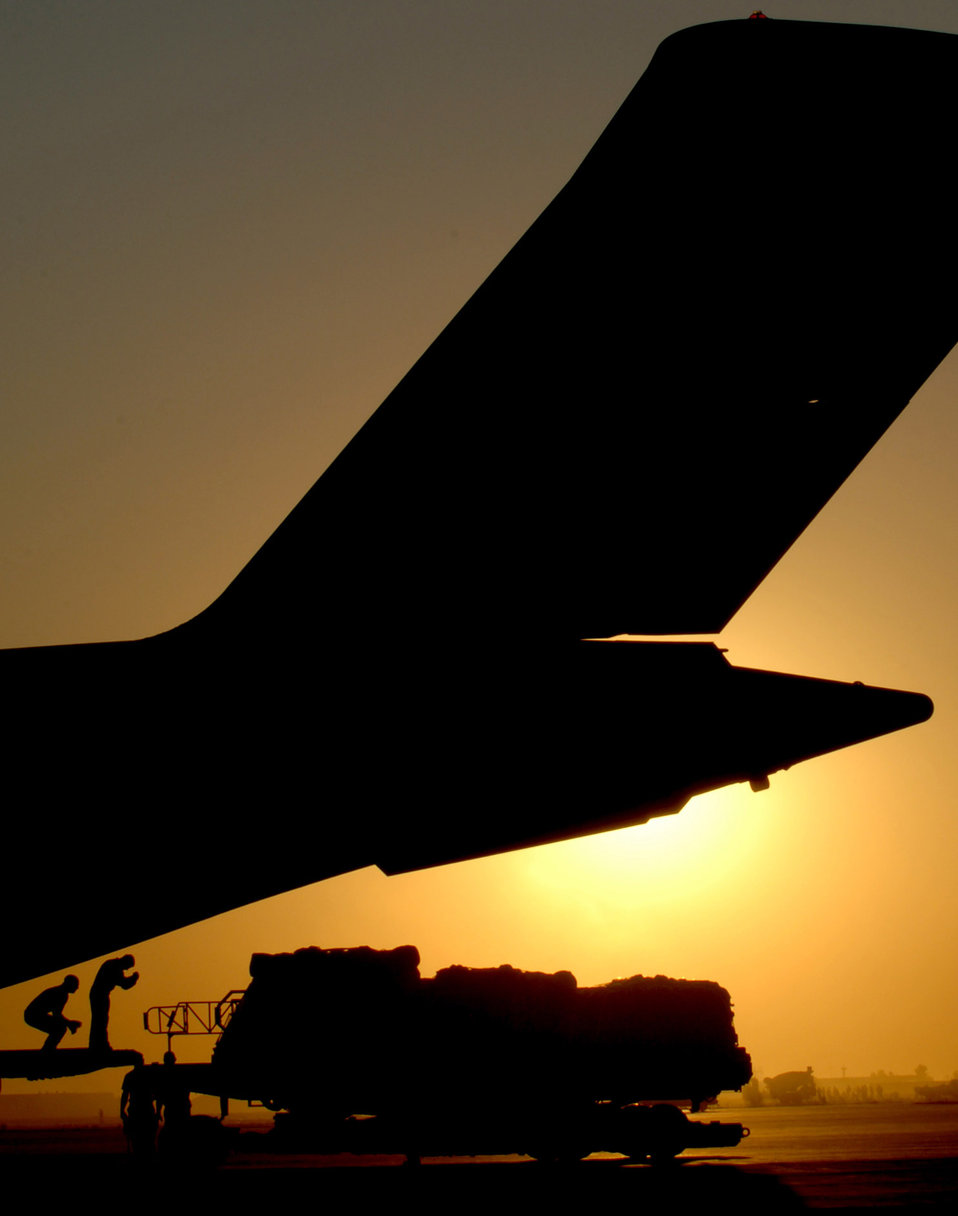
Leaving on a jet plane

The sun sets behind a C-17 Globemaster III as Airmen guide a K-loader into position Nov. 17 at Joint Base Balad, Iraq. Airmen at the aerial port at Joint Base Balad move more cargo per year than Dover Air Force Base, Del.; Charleston AFB, S.C.; and Travis AFB, Calif., combined. The C-17 is deployed from the 437th Airlift Wing at Charleston Air Force Base, S.C.